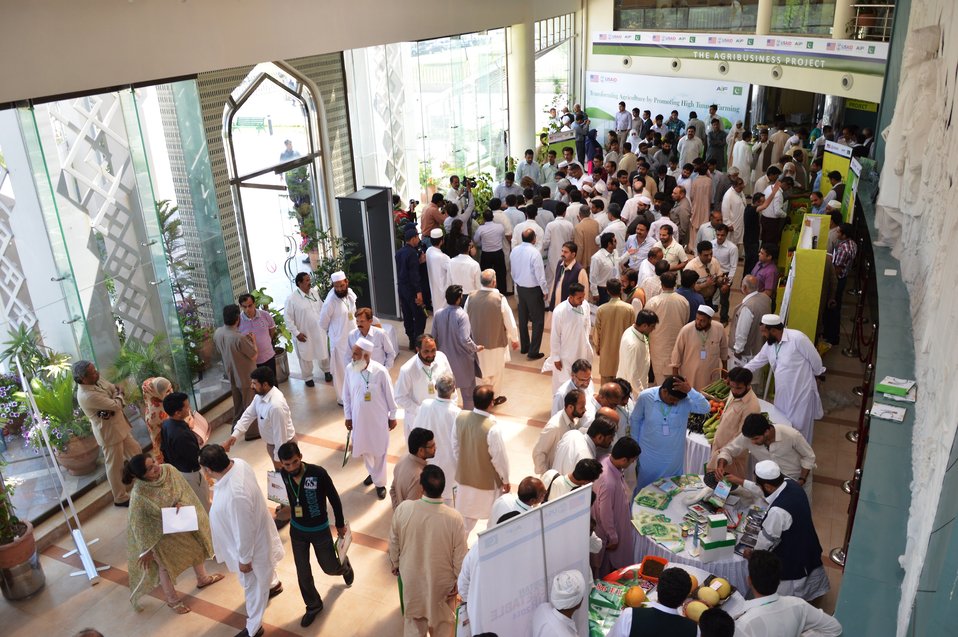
Picture (5) Pakistan vegetable Fair 2014 Islamabad May 15 2014